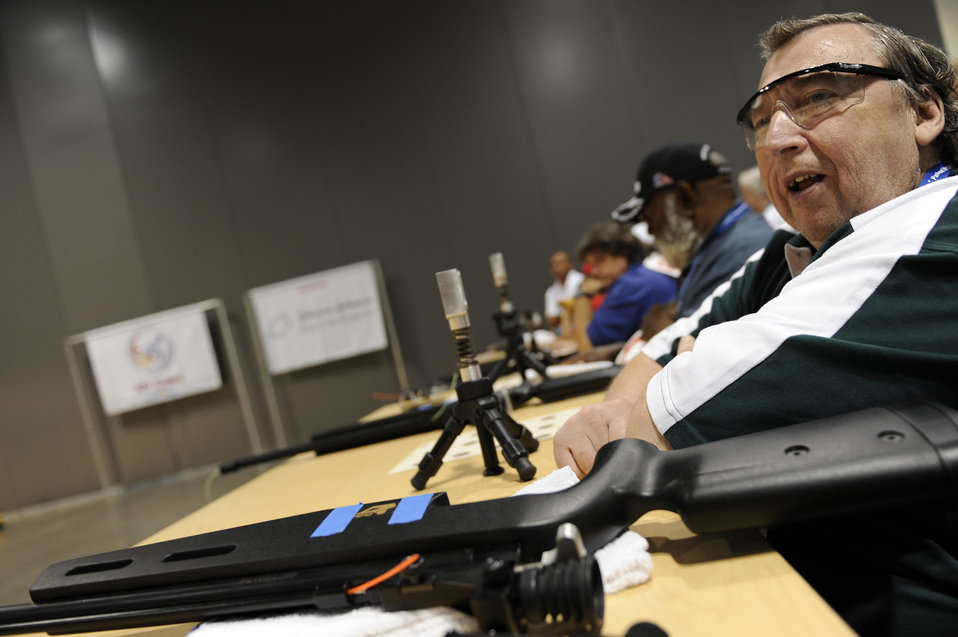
Wheelchair athletes participate in national veteran's competition

William Ethridge competes in the air gun competition during the 29th National Veterans Wheelchair Games July 14 in Spokane, Wash. Mr. Ethridge is an Air Force veteran and resides in Spokane. The 29th National Veterans Wheelchair Games runs through July 19.